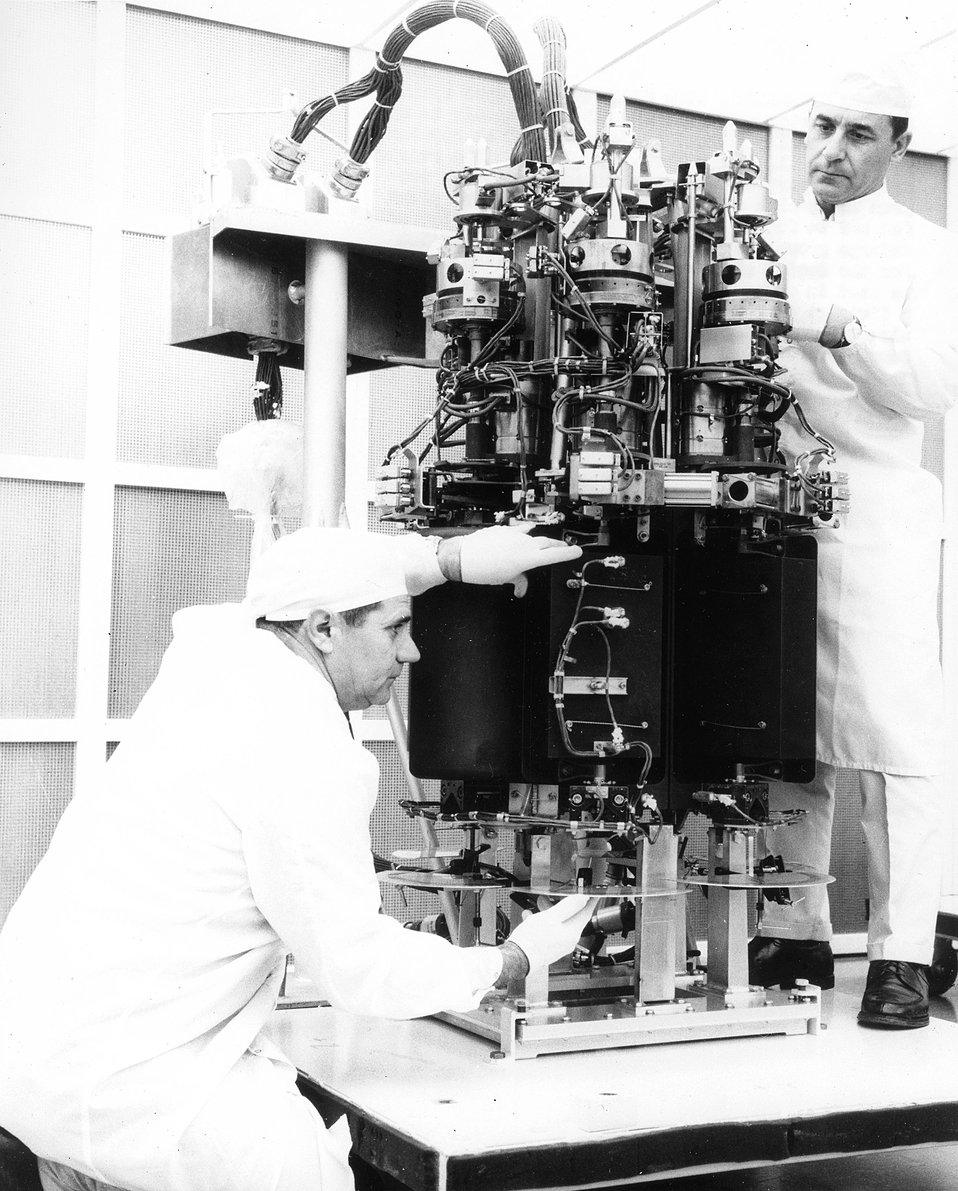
The SNAP 8DR prototype space reactor system nears the end of its assembly in an atmospherically controlled clean room at Atomic International, Conoga Park, CA.